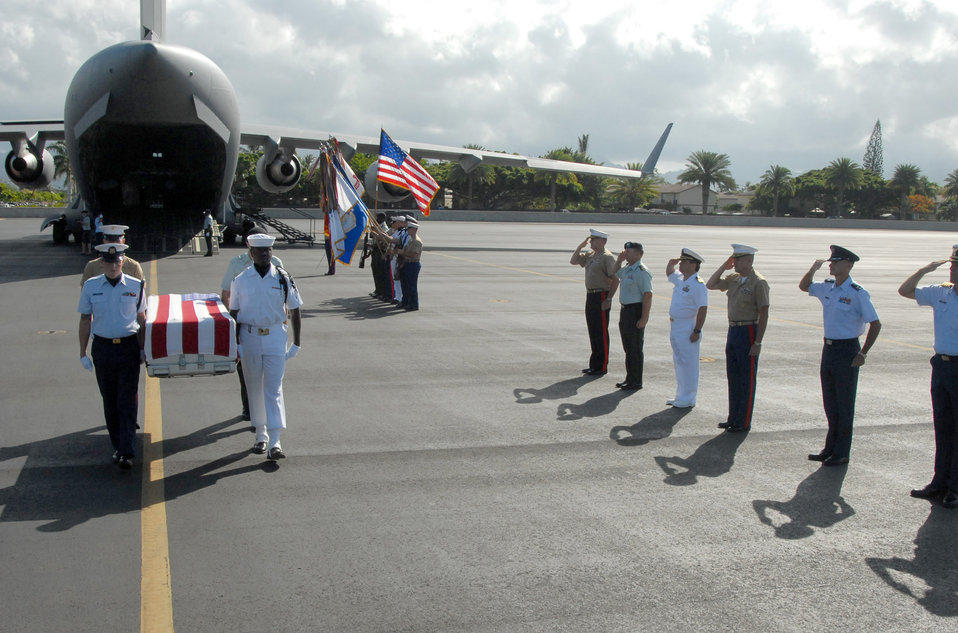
Repatriation ceremony

Service members present arms as a Pacific Command team transfers the remains of an American servicemember from a C-17 Globemaster III during a repatriation ceremony at Hickam Air Force Base, Hawaii, on Aug. 11. The remains will be identified at the Joint POW/MIA Accounting Command.